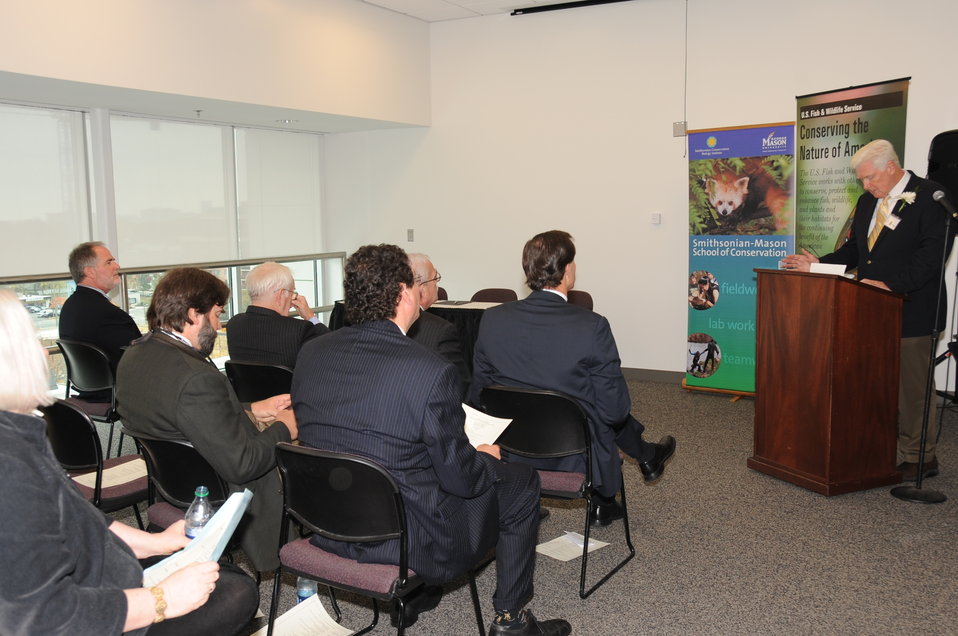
Together in Conservation

Memorandum of Understanding Signing Ceremony with U.S. Fish and Wildlife Service, Smithsonian Institution, and George Mason University. October 26, 2012